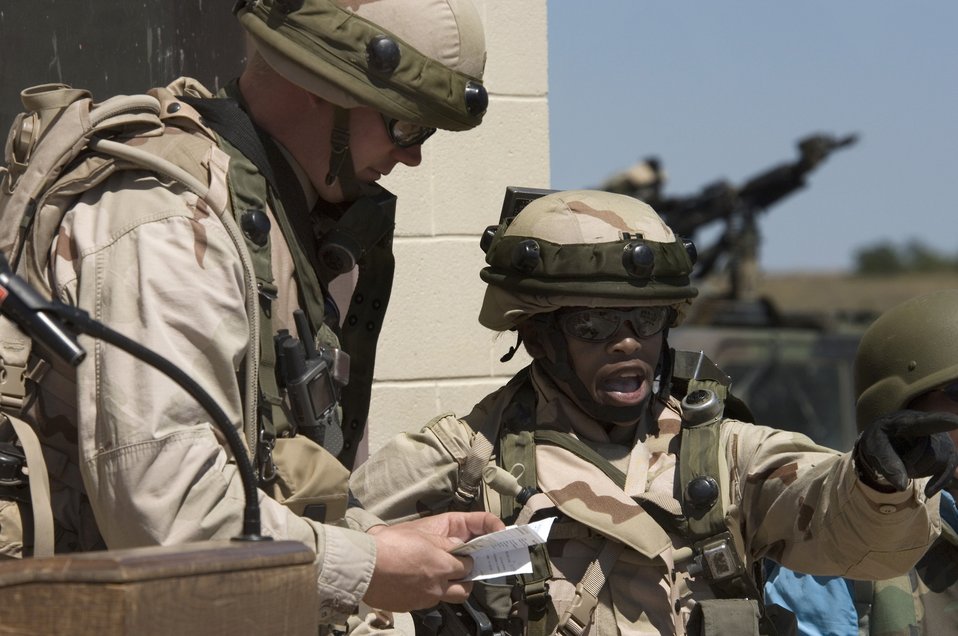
Provincial Reconstruction Team training

Capt. Jacqueline King, right, updates Lt. Col. (Dr.) Christopher Scharenbrock of the status of simulated victims during training on Tuesday, April 4, 2006, at Fort Bragg, N.C. Captain King is a physician assistant from Hickam Air Force Base, Hawaii, and Colonel Scharenbrock is an emergency medical doctor with the 60th Medical Operations Squadron at Travis Air Force Base, Calif. They are with the multi-service provincial reconstruction team that is helping with the reconstruction, security and governing of Afghanistan.